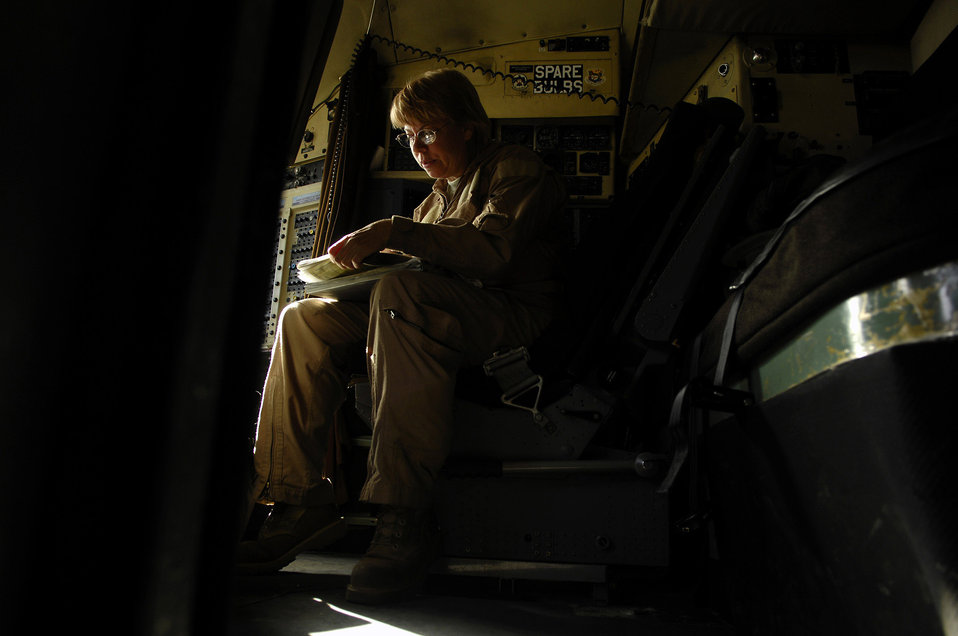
Delivering the goods

Tech. Sgt. Janna Cronk updates the mission data from a C-130 Hercules cargo mission April 16 from Bagram Air Base, Afghanistan. Sergeant Cronk is a flight engineer assigned to the 774th Expeditionary Airlift Squadron and deployed from the 105th Airlift Squadron from Nashville, Tenn.